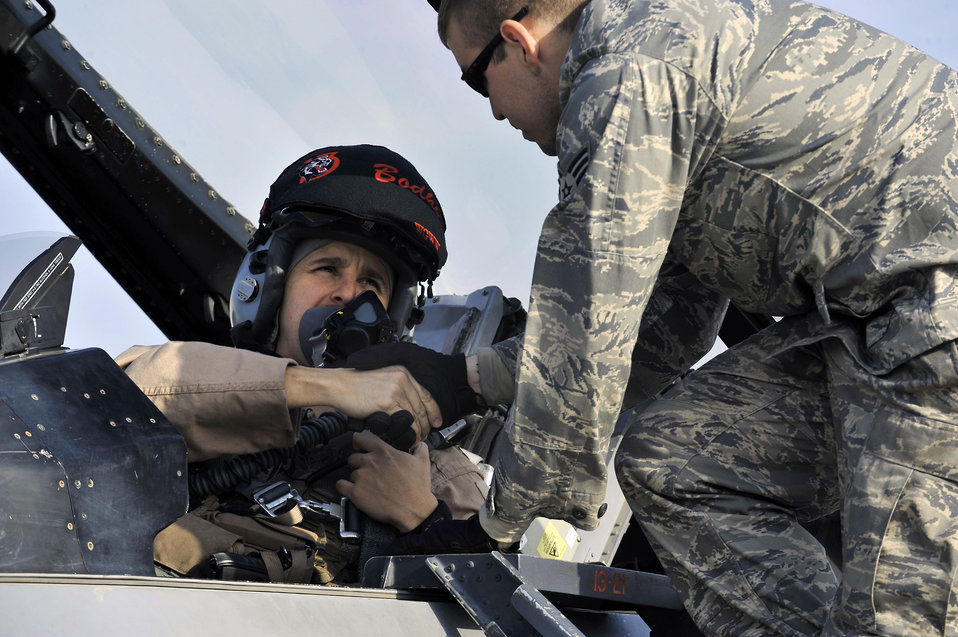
Airmen support Iraqi elections, see history in making

Capt. Don Davenport shakes the hand of Senior Airman Dwight Gower before departing to provide overwatch in support of the 2009 Iraqi provincial elections in an F-16 Fighting Falcon Jan. 30 at Joint Base Balad, Iraq. Captain Davenport is a 14th Expeditionary Fighter Squadron F-16 pilot. Airman Gower is a 332nd Expeditionary Aircraft Maintenance Squadron F-16 crew chief. Both are deployed from Misawa Air Base, Japan.